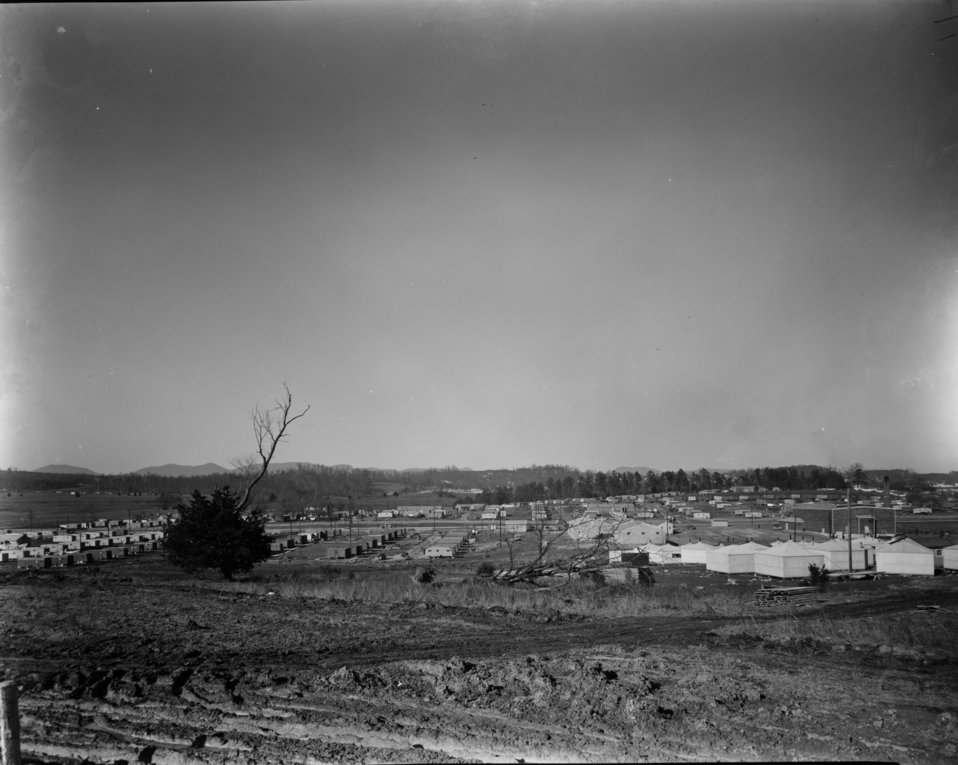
Housing at Oak Ridge